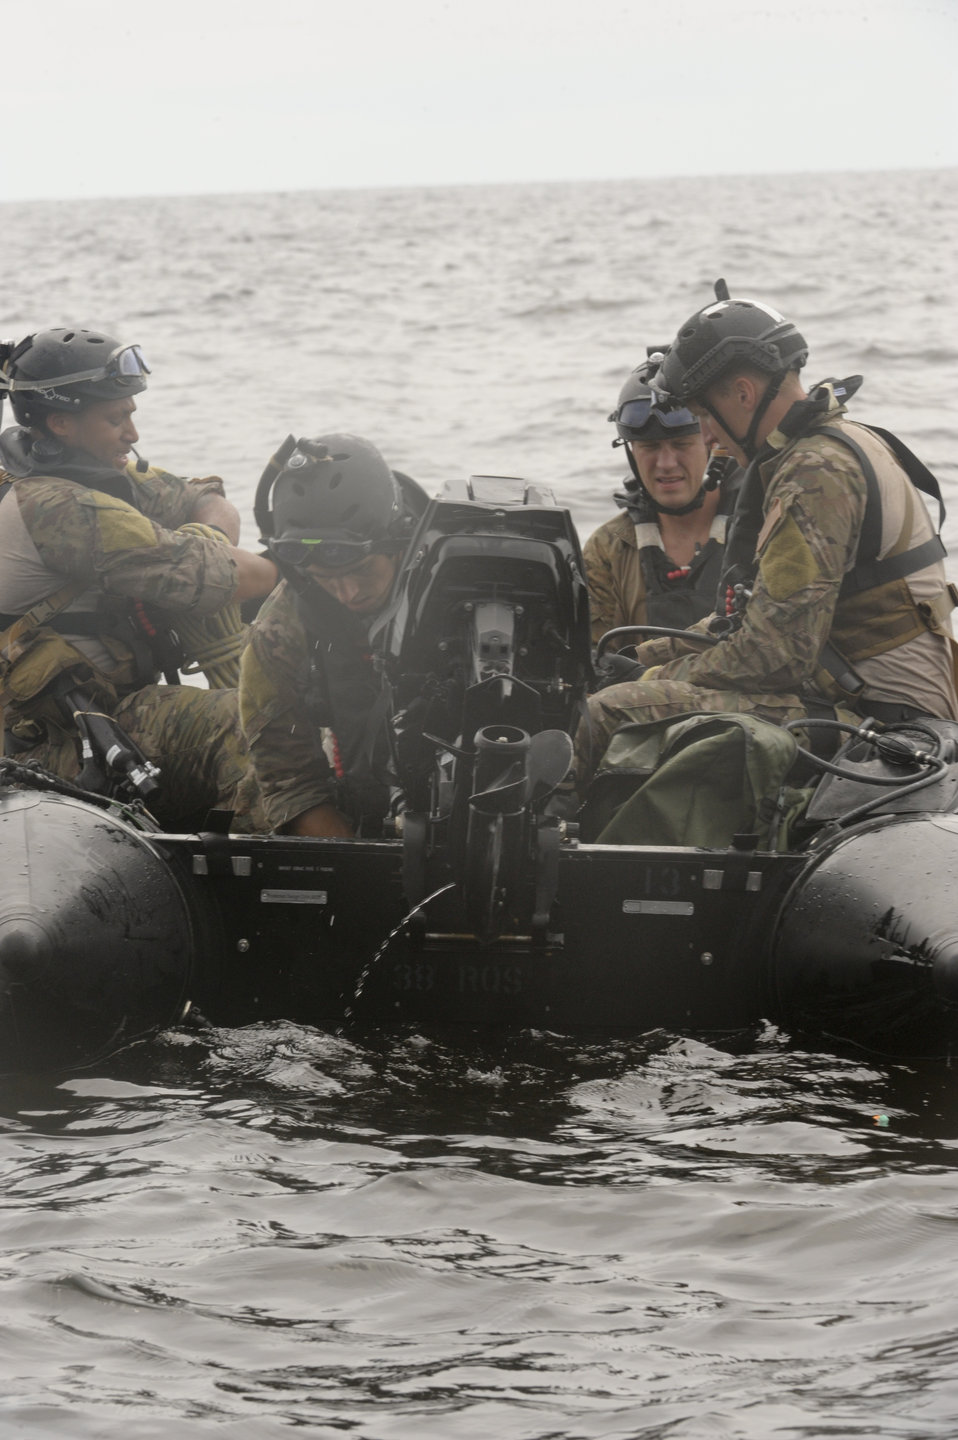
Water rescue

A team of pararescuemen with the 38th Rescue Squadron at Moody Air Force Base, Ga., set up a Zodiac F470 watercraft prior to rescuing a downed pilot during a water rescue exercise in the Gulf of Mexico on Aug. 14, 2012. The team and boat were deployed from an HH-60 Pave Hawk.